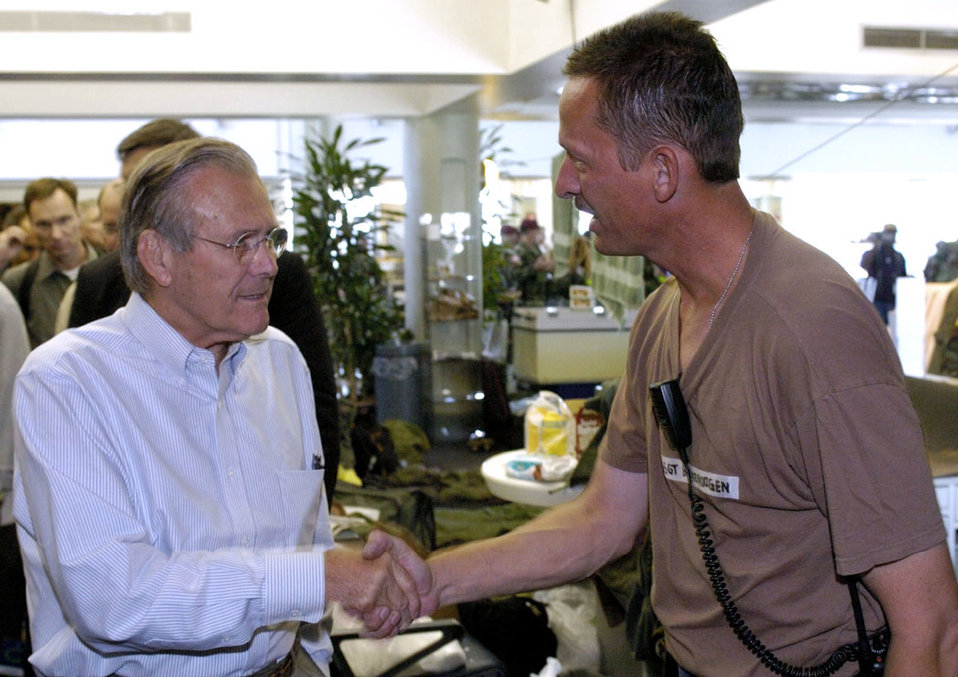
Rumsfeld, Myers visit New Orleans airport

LOUIS ARMSTRONG NEW ORLEANS INTERNATIONAL AIRPORT, La. -- Secretary of Defense Donald Rumsfeld thanks Staff Sgt. W. Lance Boekenoogen for his efforts during the hurricane evacuation. Sergeant Bokenoogen is assigned to the 152nd Medical Group in Reno, Nev.